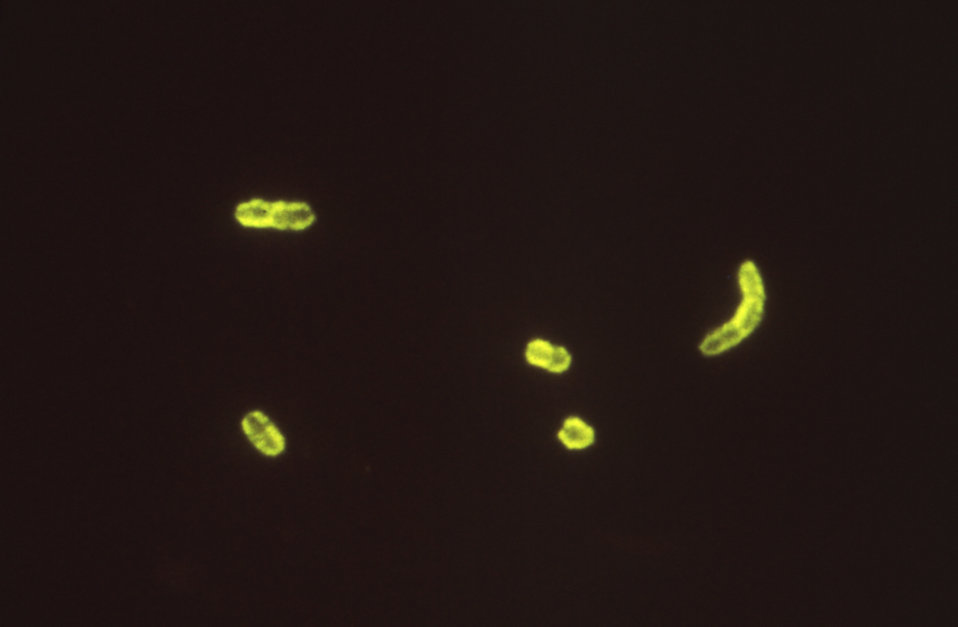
This photomicrograph depicts Yersinia pestis bacteria using a fluorescent antibody stain.